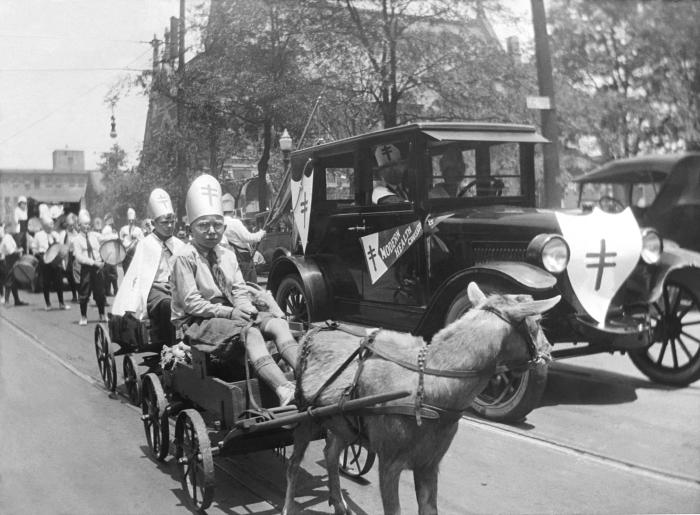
This historic photograph depicted a parade held in the observance of 'Child Health Day'. The setting was a town in the state of Georgia. The original image was scanned from a glass lantern slide donated by the Minnesota Department of Health, and is one of a historical collection of documents and photographs devoted to observances of Child Health Day in the United States.